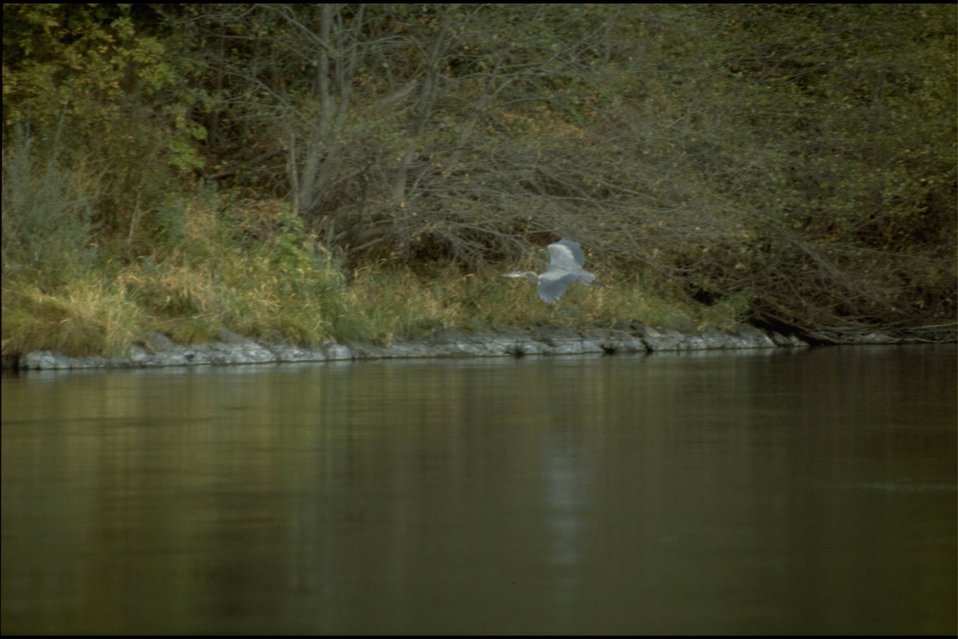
Rogue River - Great Blue Heron.